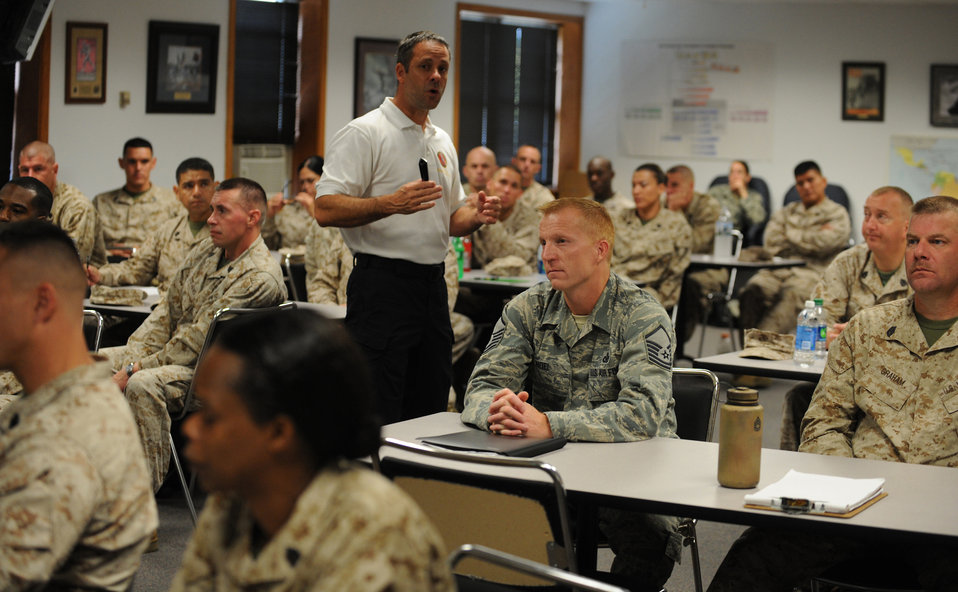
Critical training

Air Force Master Sgt. Michael Noel attends class with Marines and one international student during the U.S. Marine Corps Staff Noncommissioned Officer Academy Advanced Course at Marine Corps Base Quantico, Va., Sept. 14, 2012. Noel is attending Senior Enlisted Professional Military Education as part of a new program called EPME-Next. Noel is the Secretary of the Air Force Public Affairs superintendent of force management at the Pentagon.